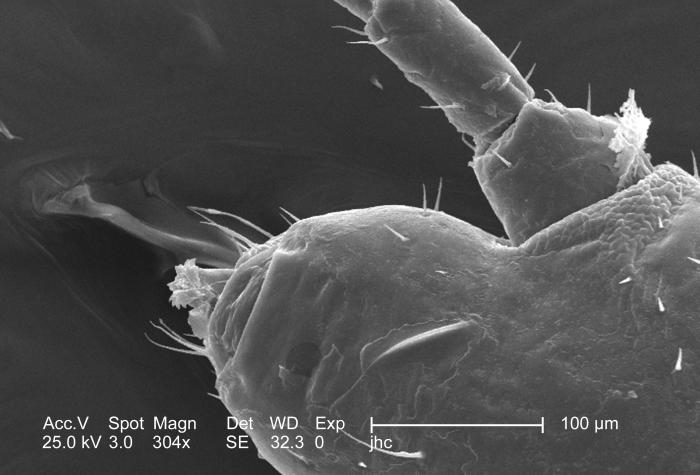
Under a moderately low magnification of 304x, this 2006 scanning electron micrograph (SEM) depicted an enlarged inferior view of the mouthparts found on the cephalic, or head region of a male body louse, Pediculus humanus var. corporis. The 'floral'-like structure in this field of view represents the labial funnel, or 'haustellum', which is a tube-like structure, formed from what is believed to be a modification of the labium, but is armed with teeth, which act to grab, and hold on to the skin surface of its host while obtaining its blood meal. The insect pierces the host's skin with its sharply-pointed set of three stylets, and together, form what is termed the fascicle, which is hidden from view in this image. Note PHIL# 9214, 9216, in which case a louse is in its feeding mode on the skin surface of its host. Also note the scape and pedicle, or the respective proximal segments of the insect's left antenna in this view as well.